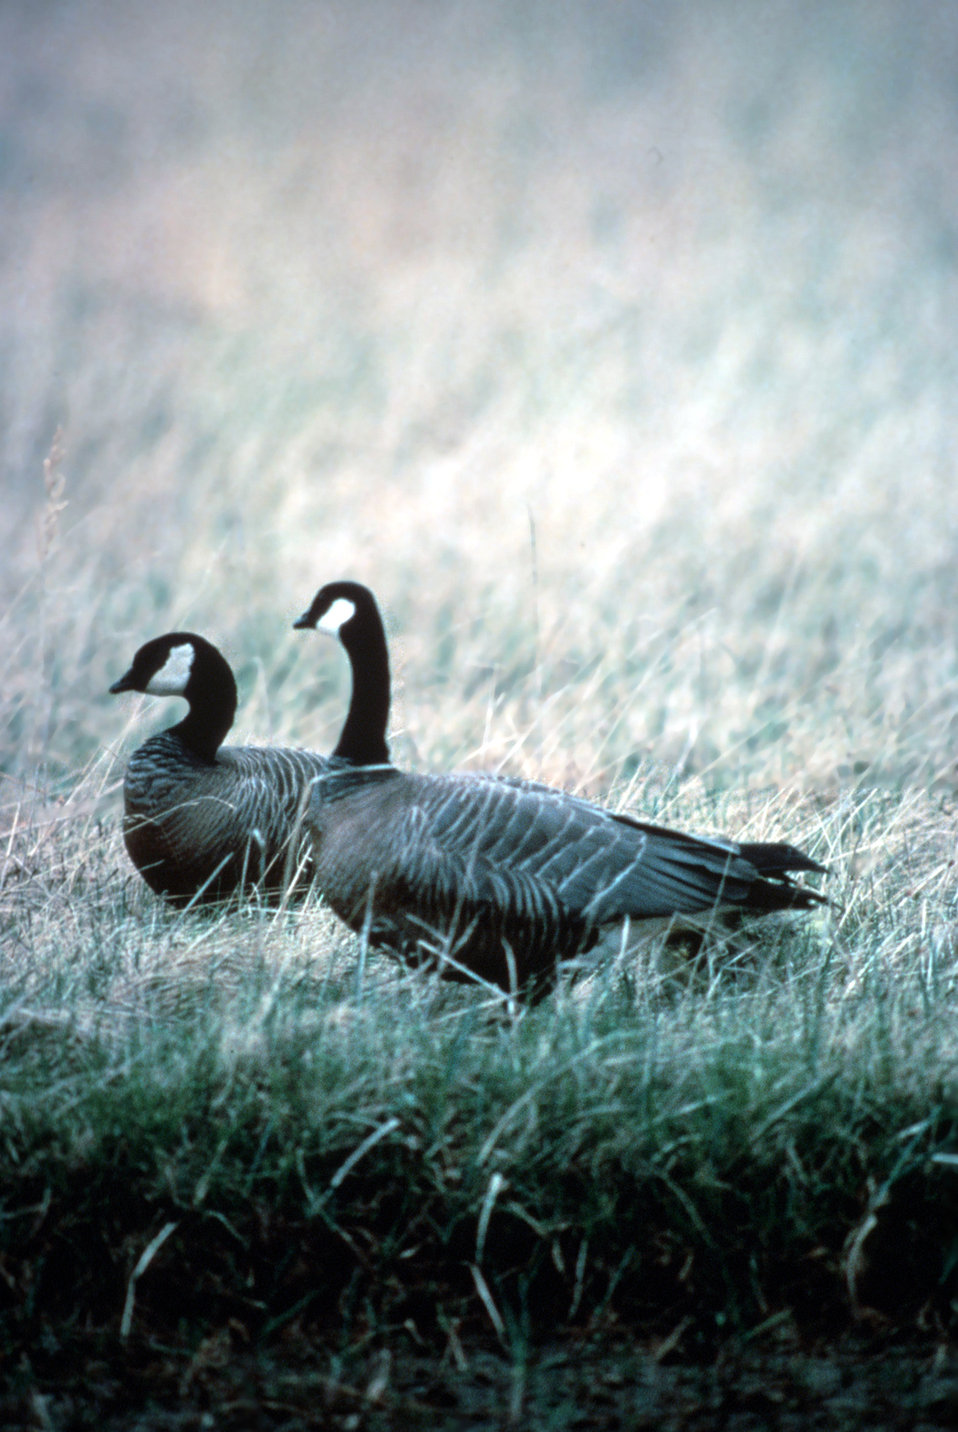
Cackling Canada goose pair pause in grassy area.